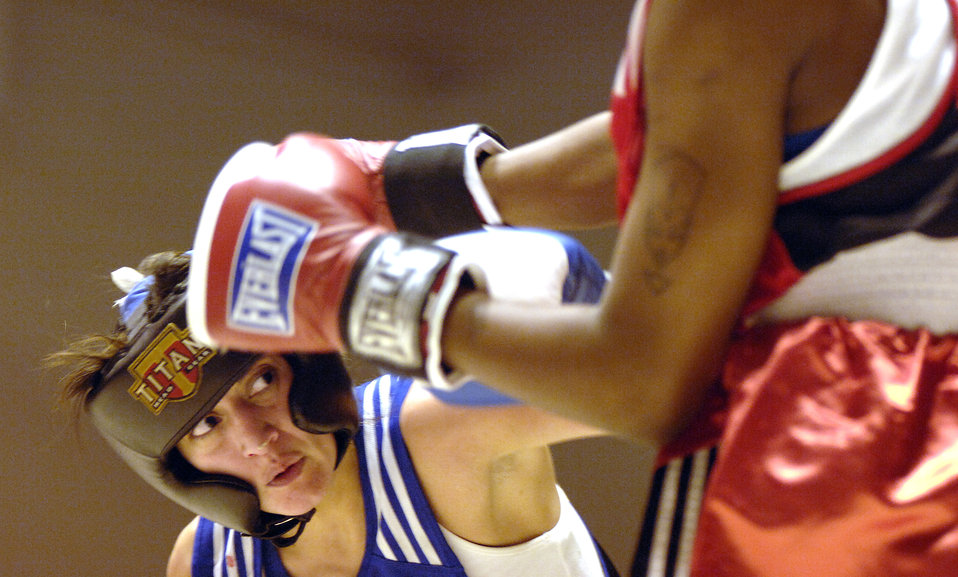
Boxing for the team

SAN ANTONIO (AFPN) -- Celsa Reyes connects with a body shot jab to Emma Atolagbe. Reyes won by decision Jan. 20. Reyes is from F.E. Warren Air Force Base, Wyo., and Atolagbe is from Langley AFB, Va. Both will represent the Air Force at the Armed Forces Boxing Tournament at Fort Huachuca, Ariz., Feb. 6 to 11.